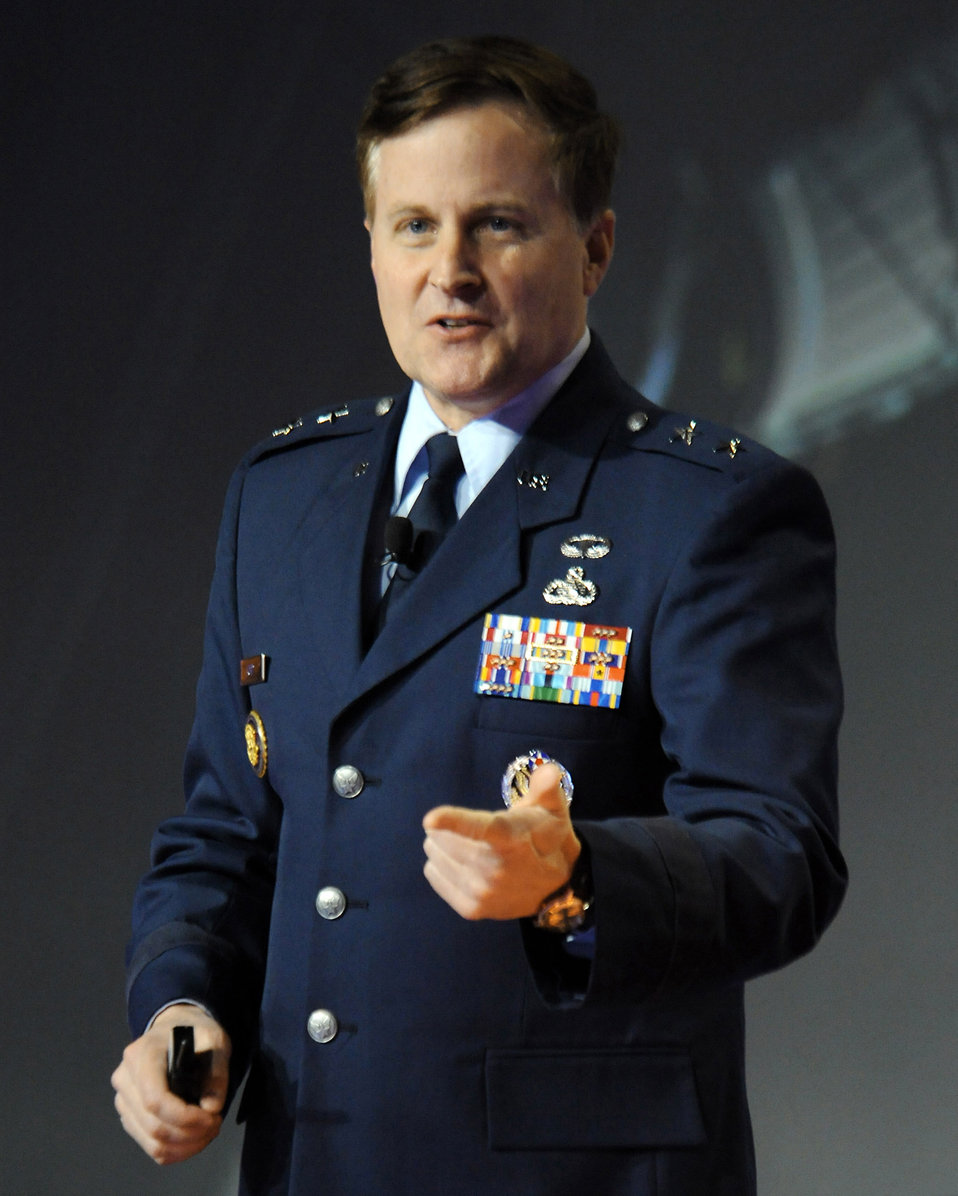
Generals discuss future issues at National Space Symposium

Maj. Gen. William T. Lord talks to symposium attendees about risks in the cyber domain at the 25th National Space Symposium March 31 in Colorado Springs, Colo. General Lord is the commander of Air Force Cyberspace Command (provisional) at Barksdale Air Force Base, La.